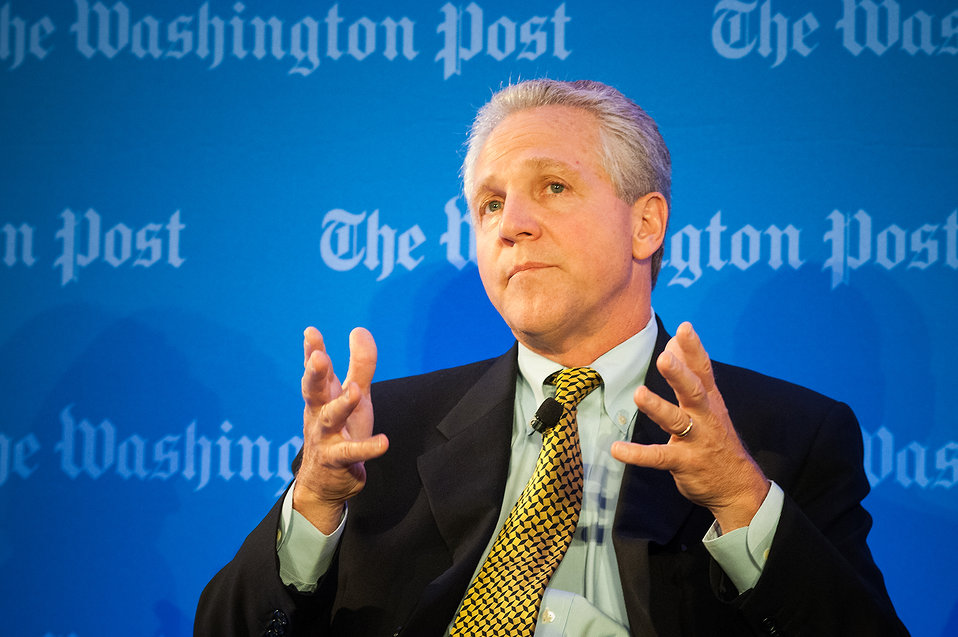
Samuel Roberts Noble Foundation President and Chief Executive Officer (CEO) William Buckner discusses The Growing Consumer Demands for a Healthy Sustainable Food System during the annual live forum, “Future of Food: Building a Sustainable Food System 2013,” sponsored by the Washington Post Live in Washington, D.C. on Wednesday, May 22, 2013. Agriculture Secretary Tom Vilsack, leading agricultural, government and nutrition experts discussed expanding healthy, sustainable food systems including public-private partnerships, the market’s role in nutrition and the future of agricultural innovation.